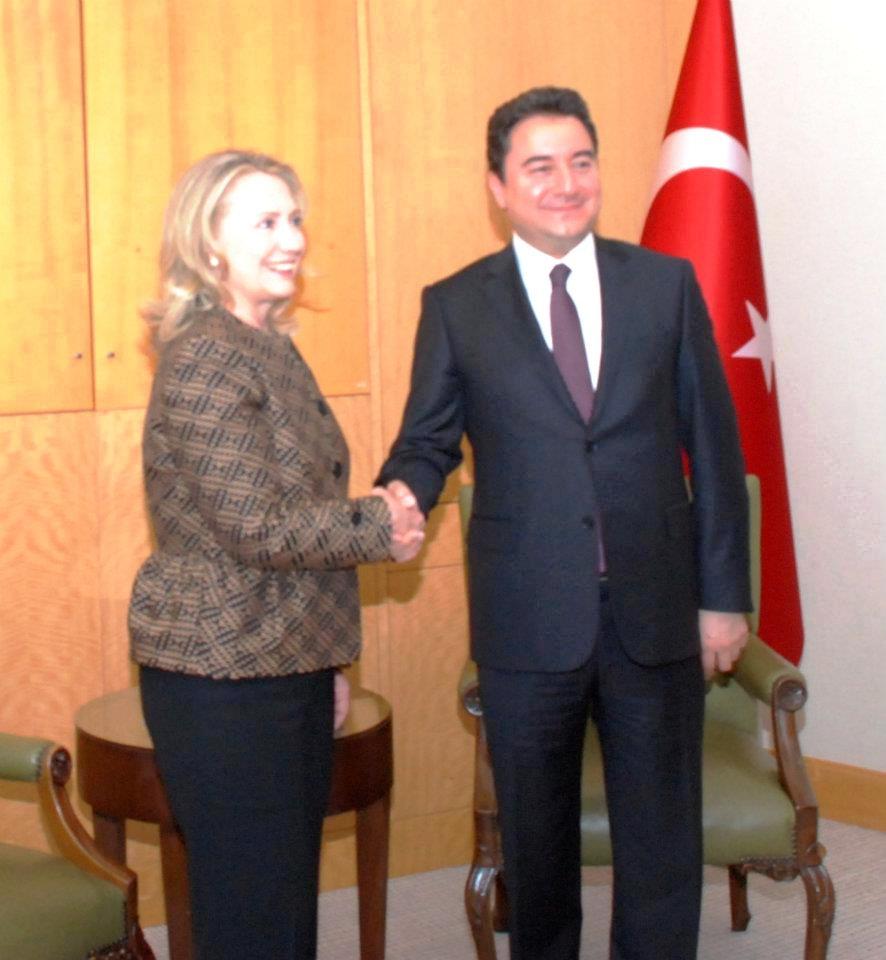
Secretary Clinton Meets With Turkish Deputy Prime Minister Babacan

U.S. Secretary of State Hillary Rodham Clinton meets with Turkish Deputy Prime Minister Ali Babacan in Istanbul, Turkey, on June 7, 2012.